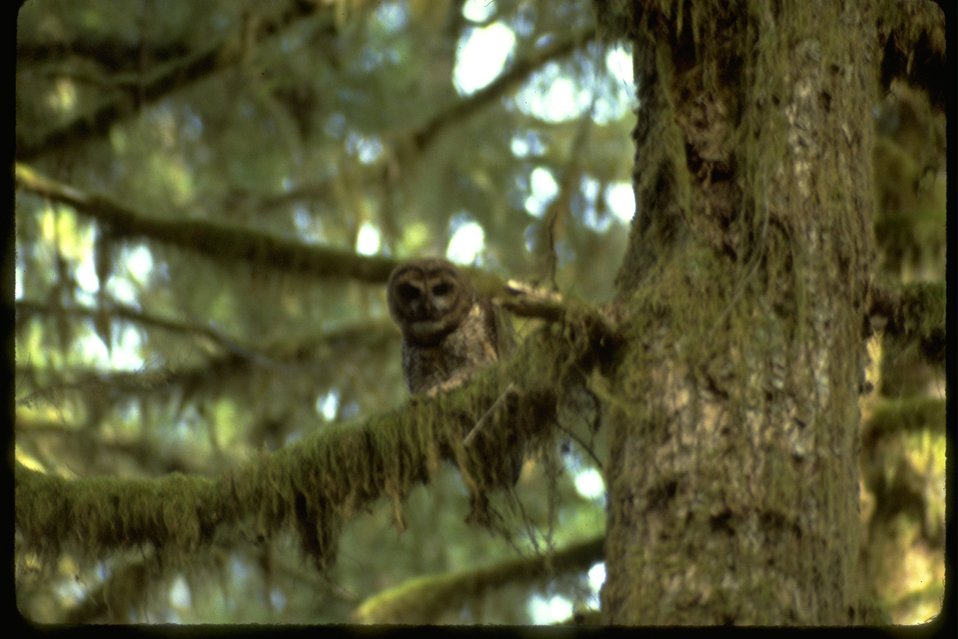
Spotted Owl sitting in a tree.